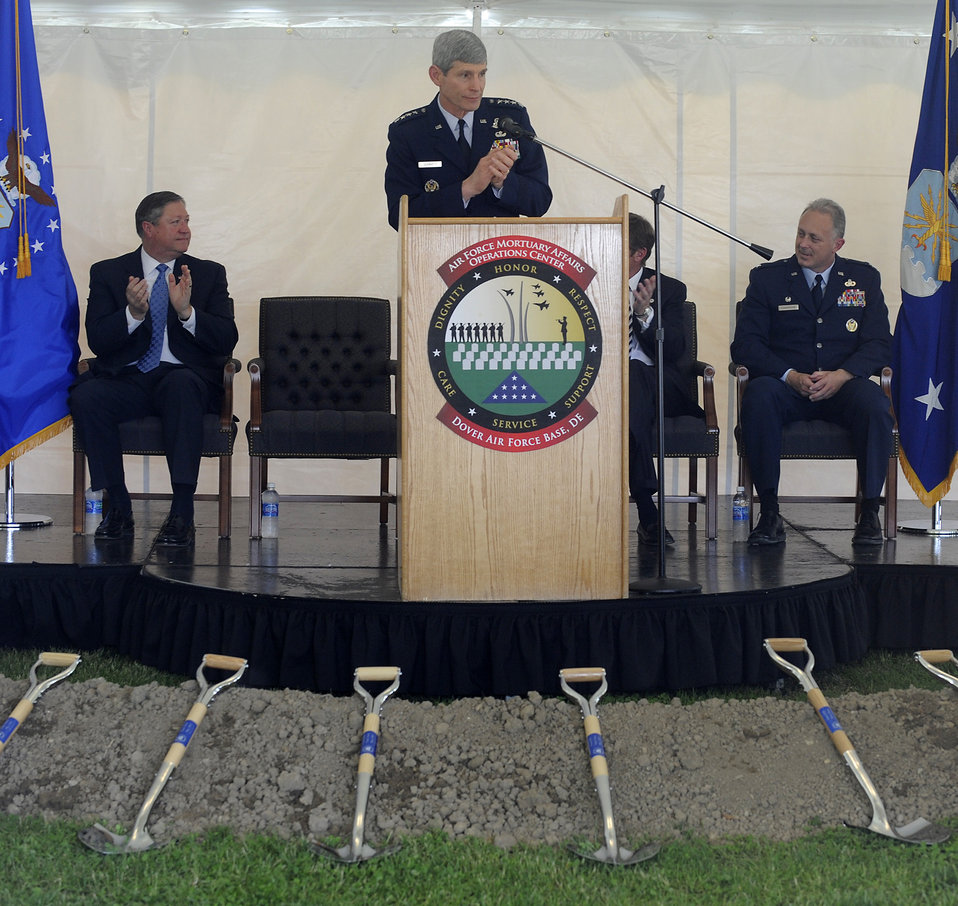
Fisher House Groundbreaking at Dover

Gen. Norton Schwartz, Air Force Chief of Staff, applauds members of the Gold Star Mothers of America, who were in attendance during the groundbreaking ceremony of the Fisher House at Dover Air Force Base, Del., May 1. From left are Secretary of the Air Force Michael B. Donley and Col. Robert Edmondson, commander of the Air Force Mortuary Affairs Operations Center, which provides comfort for those awaiting the return of their fallen family members from overseas.